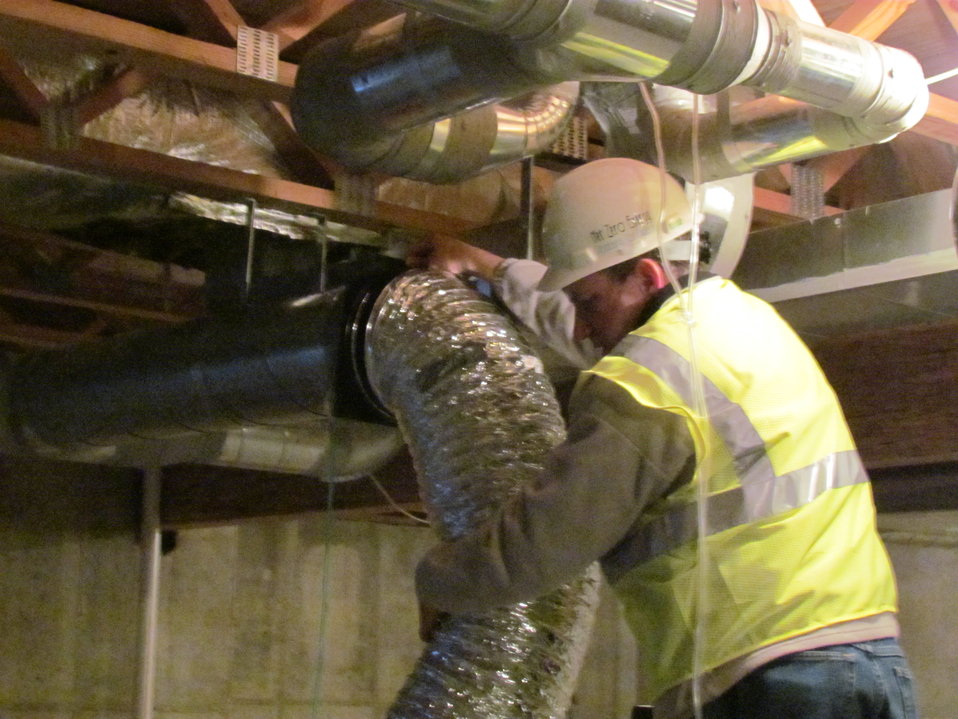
Net-Zero Energy Residential Test Facility – Photo showing worker positioning temporary duct measured to measure air leakage in individual duct runs within facility.